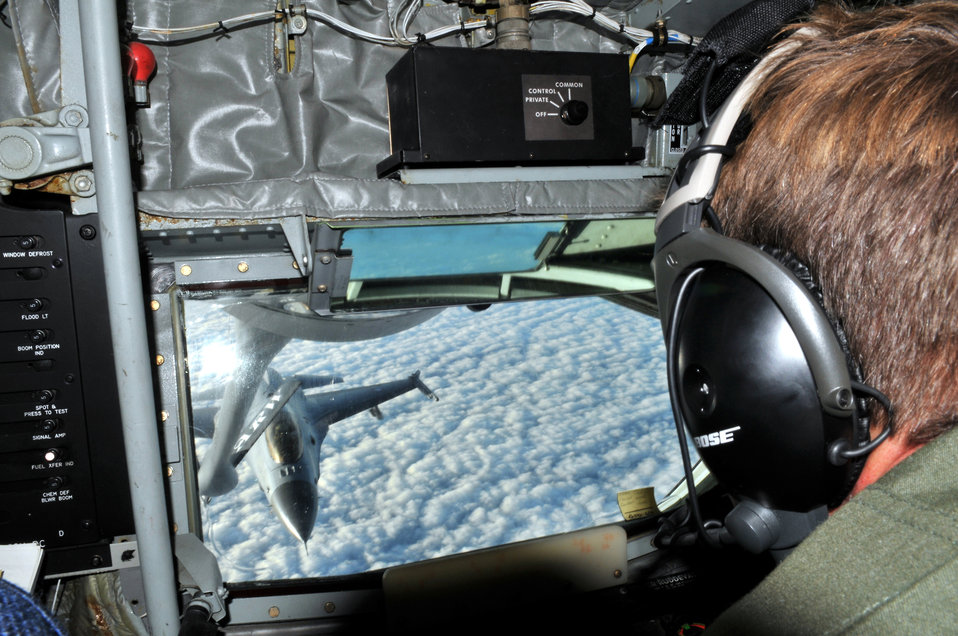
Refueling lifeline of U.S., NATO air ops

Chief Master Sgt. Christopher Powell guides a KC-135 Stratotanker boom pod as a Royal Danish air force pilot positions a F-16 Fighting Falcon to take on fuel in the skies above Denmark Dec. 8, 2009. The Danish F-16 was one of 30 performing their semi-annual aerial refueling training. Chief Powell is a 100th Operations Group boom operator.